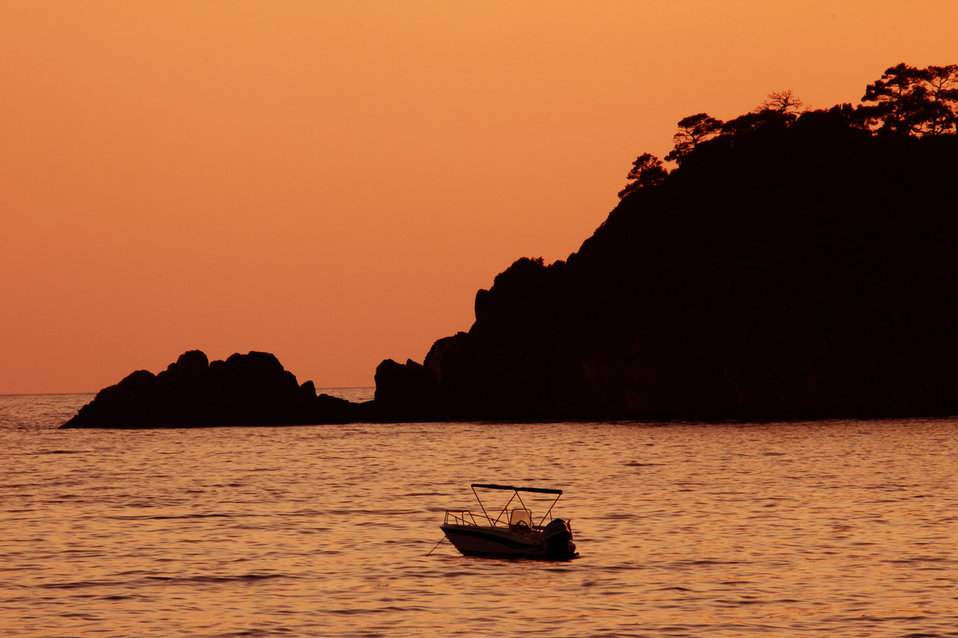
Orange boat at sea

Small boat at sea at orange sunset.